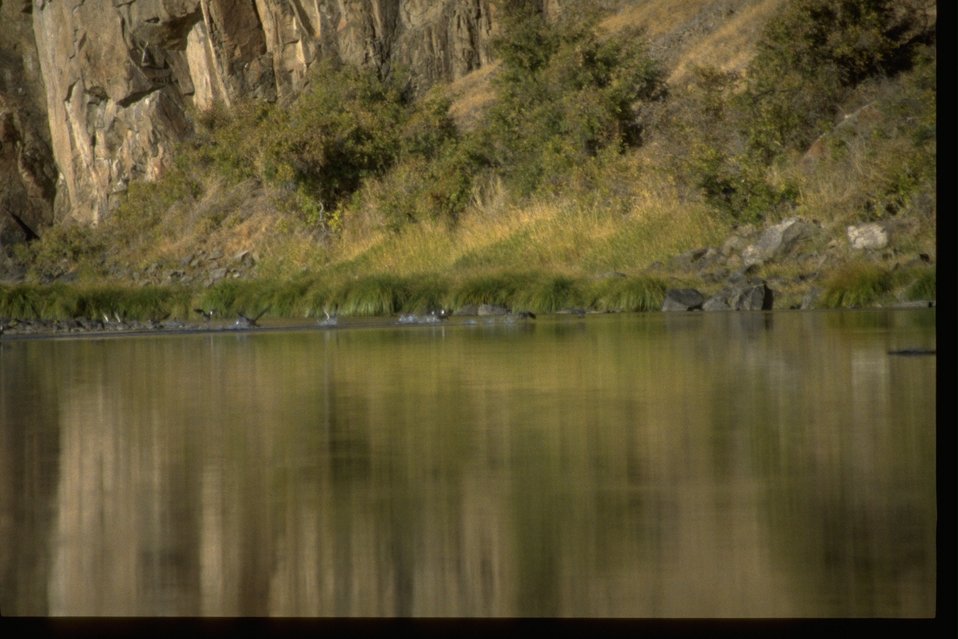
Riparian vegetation and juniper along the John Day River.